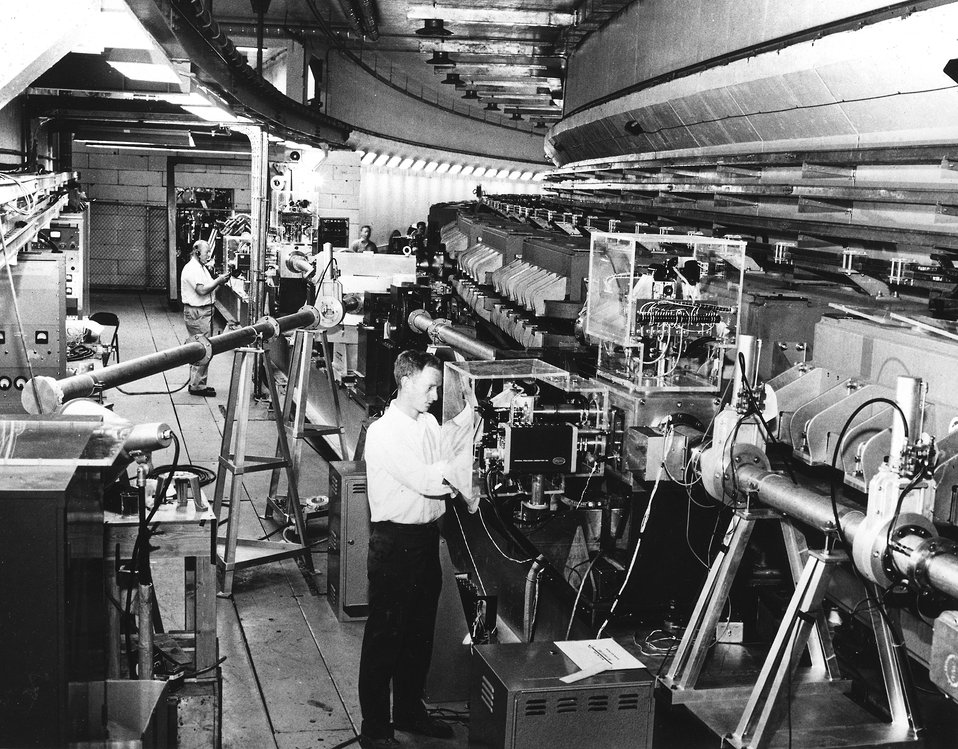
Alternating Gradient Synchrotron at Brookhaven National Laboratory. The pipe extending across the aisle (to left) is the exit pipe for an analyzer magnet which bends the protron beam through 25 degrees to determine the energy spread of the protons. In the foreground is a viewing box with Lucite covers over the drive mechanisms. c. 1961